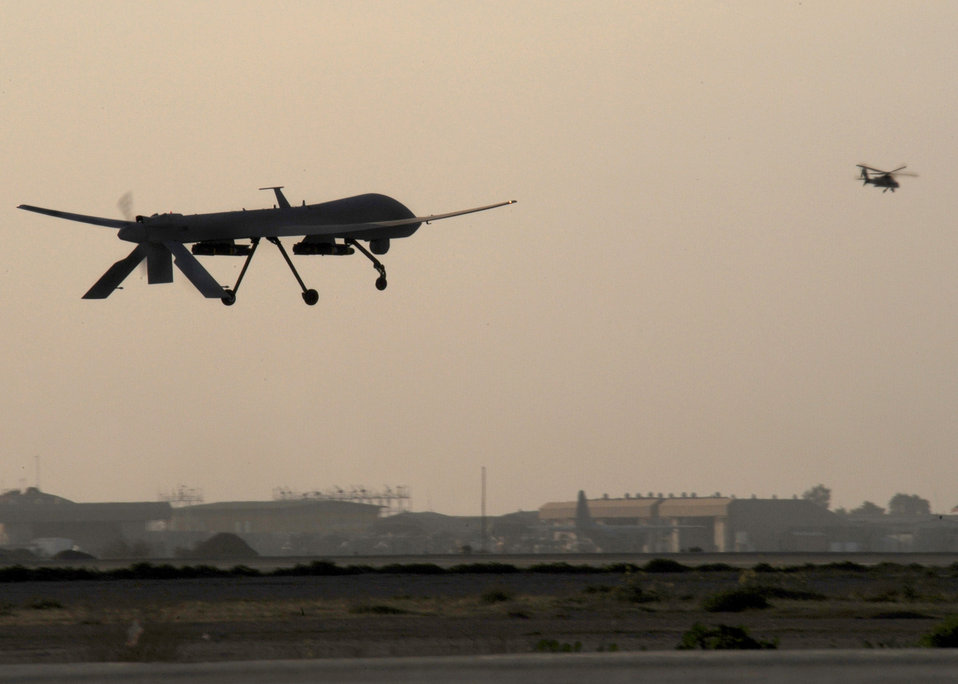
New predator on the prowl

A new MQ-1 Predator takes off on its maiden flight Feb. 13 at Joint Base Balad, Iraq. The 332nd Air Expeditionary Wing received the unmanned aircraft system, which had no operational hours on it, and immediately put the aircraft into action.